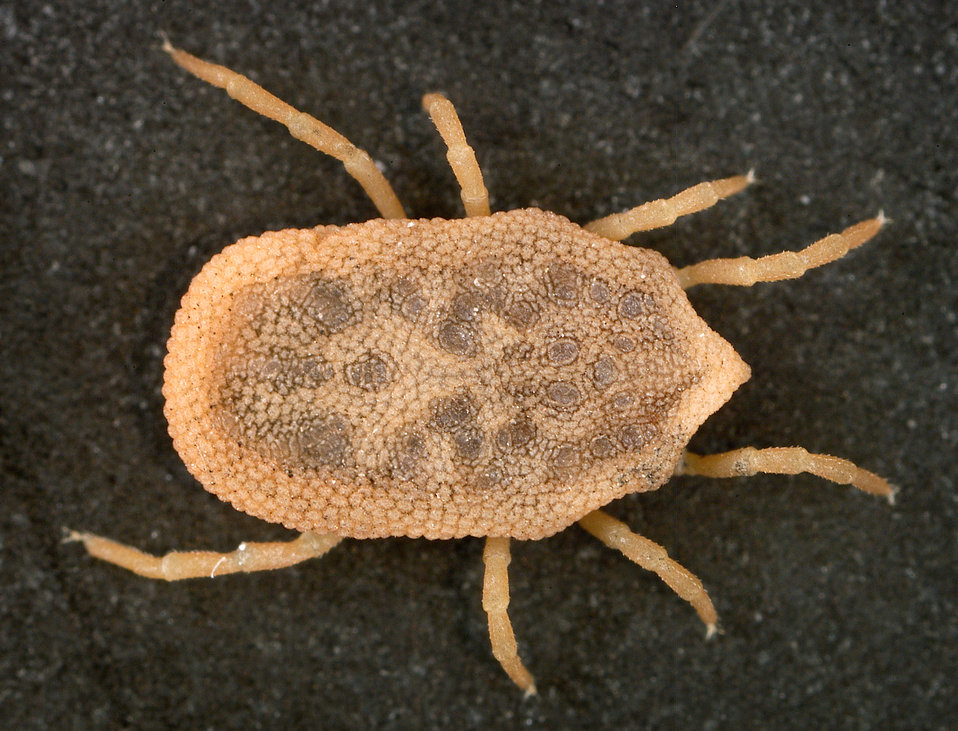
This is a dorsal view of the 'soft tick' Carios kelleyi, formerly Ornithodoros kelleyi, or the 'Bat Tick'.